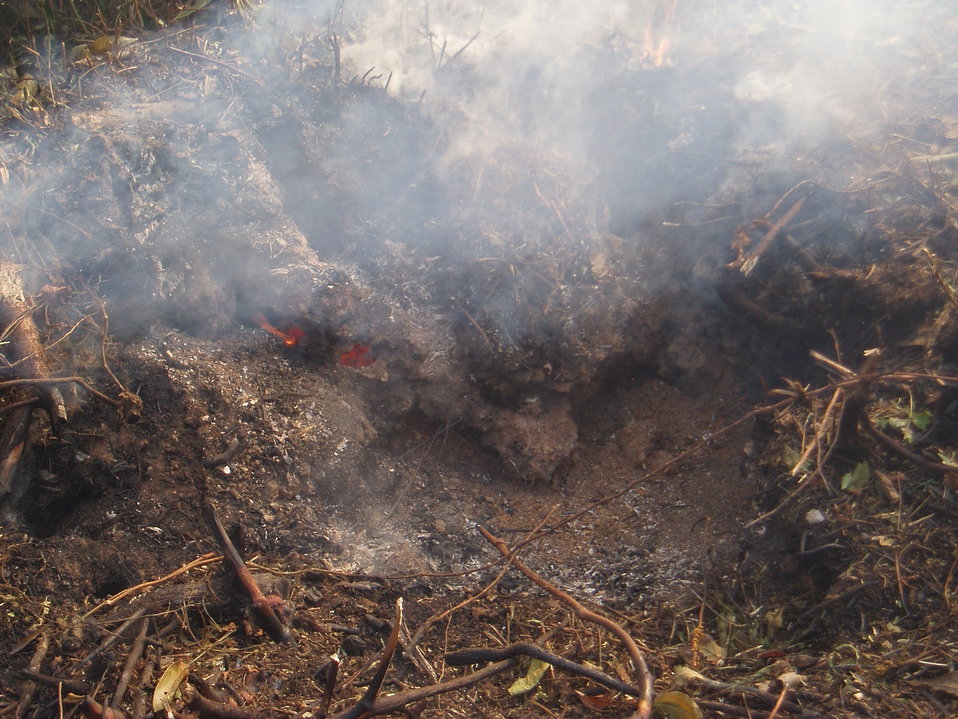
Peat heat

Suffolk, VA, August 2011. Peat soil burns like hot coals deep into the gound at the Lateral West Fire on Great Dismal Swamp National Wildlife Refuge. The carbon-rich soil was formed form hundreds of years accumulation of plant material. Fires in peat will continue to smolder and produce smoke unless they are saturated with water.